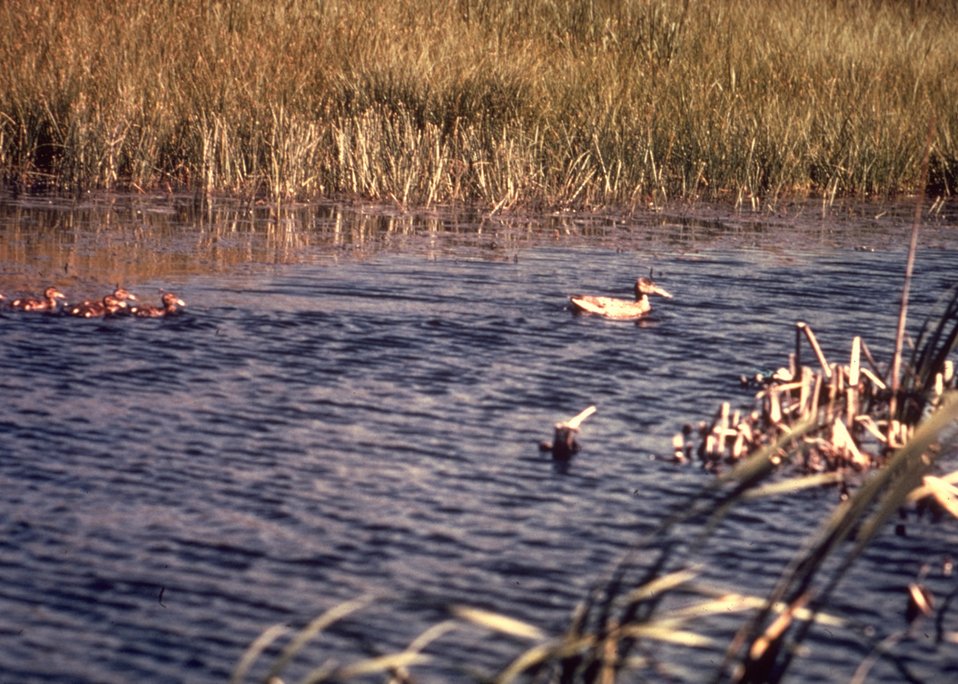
View of ducks swimming in river.